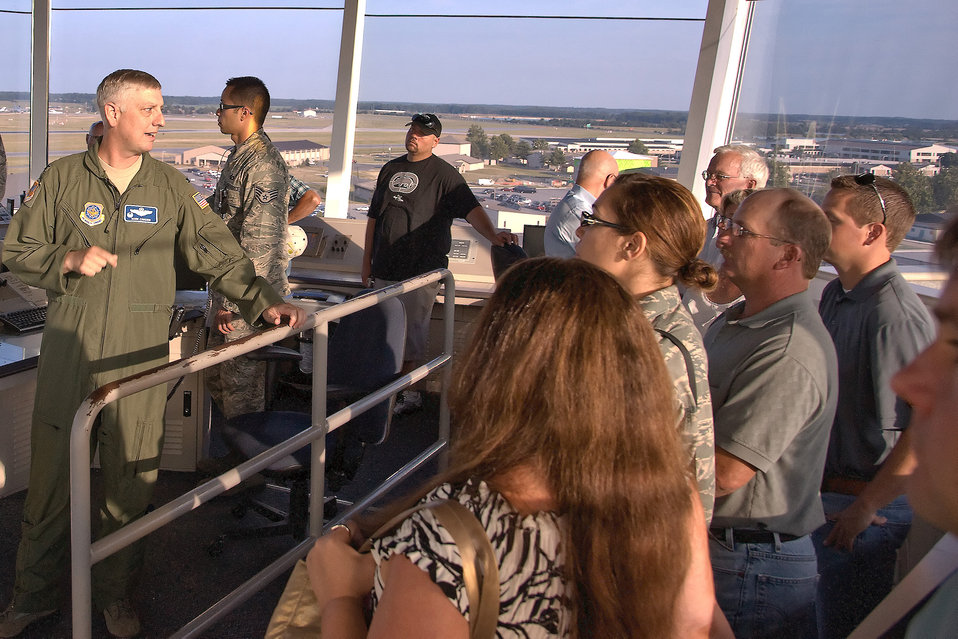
BASH

Col. Mark Camerer explains the mission of Dover Air Force Base, Del., to local landowners June 15, 2011, at the control tower there. Landowners were in the tower as part of landowner appreciation day to thank them for allowing access to their land to keep wildlife off the flightline. Colonel Camerer is the 436th Airlift Wing commander.